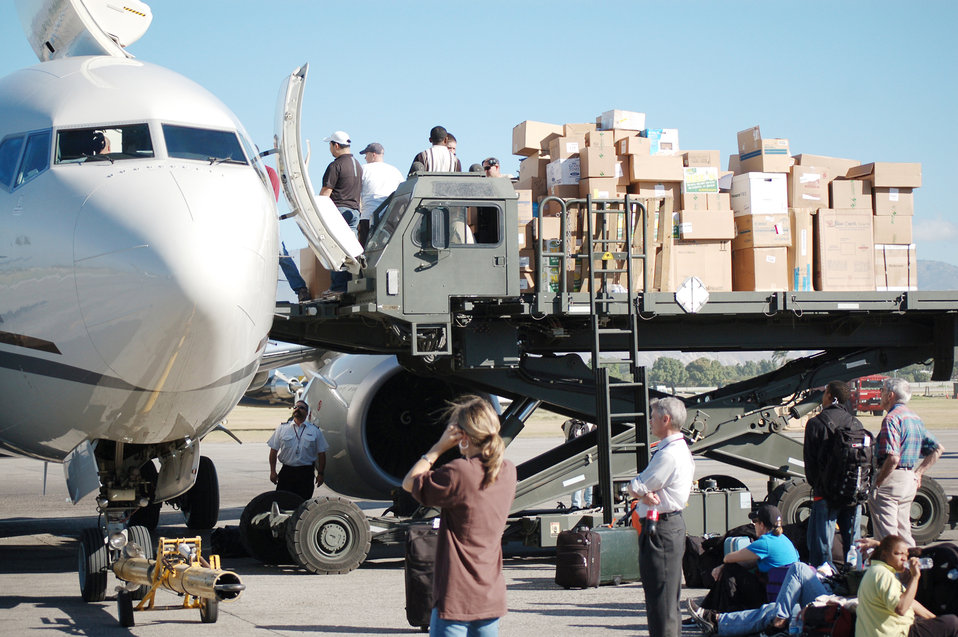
Airman sees Haiti scene unfold from under the brim of many hats

Airmen assigned to the 621st Contingency Response Wing from Joint Base McGuire-Dix-Lakehurst, N.J., assist with the hand-unloading of a civilian relief flight during Operation Unified Response at the Toussaint L'Ouverture International Airport Jan. 21, 2010, in Port-au-Prince, Haiti. The wing responded in the aftermath of a 7.0 magnitude earthquake that crumbled most of the surrounding area killing hundreds of thousands and displacing millions from their homes.